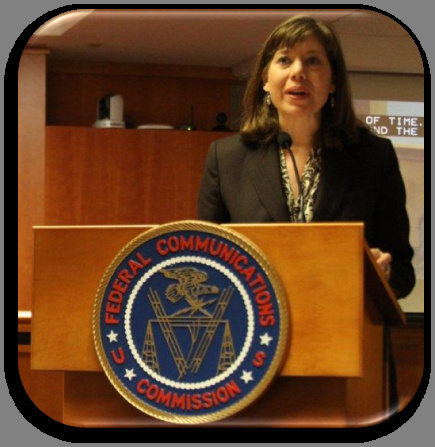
Angela Kronenberg, FCC